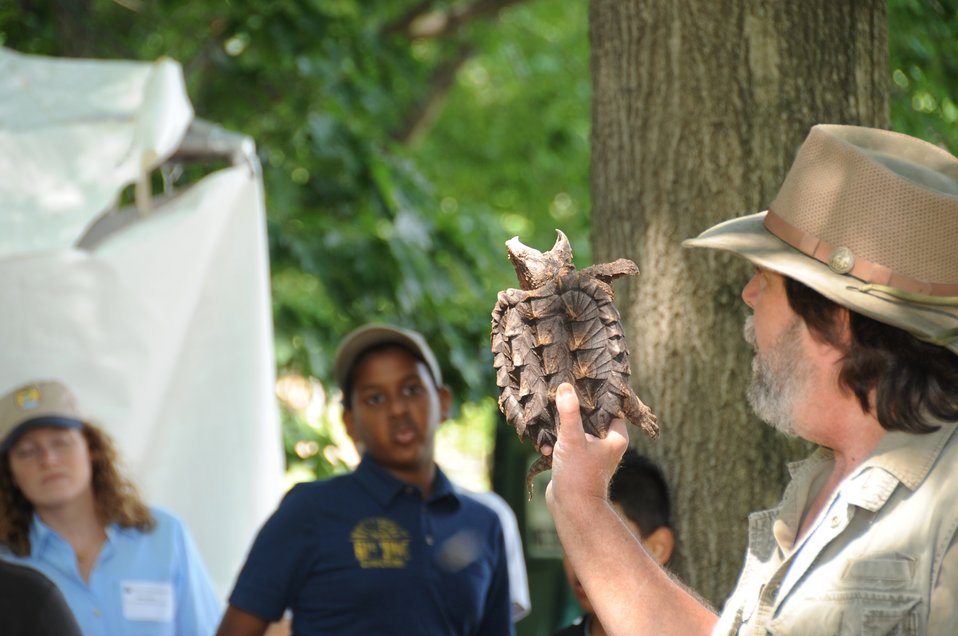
What a turtle!

This snapping turtle made a guest appearance -- and was also the first reptile many of the students had ever met!